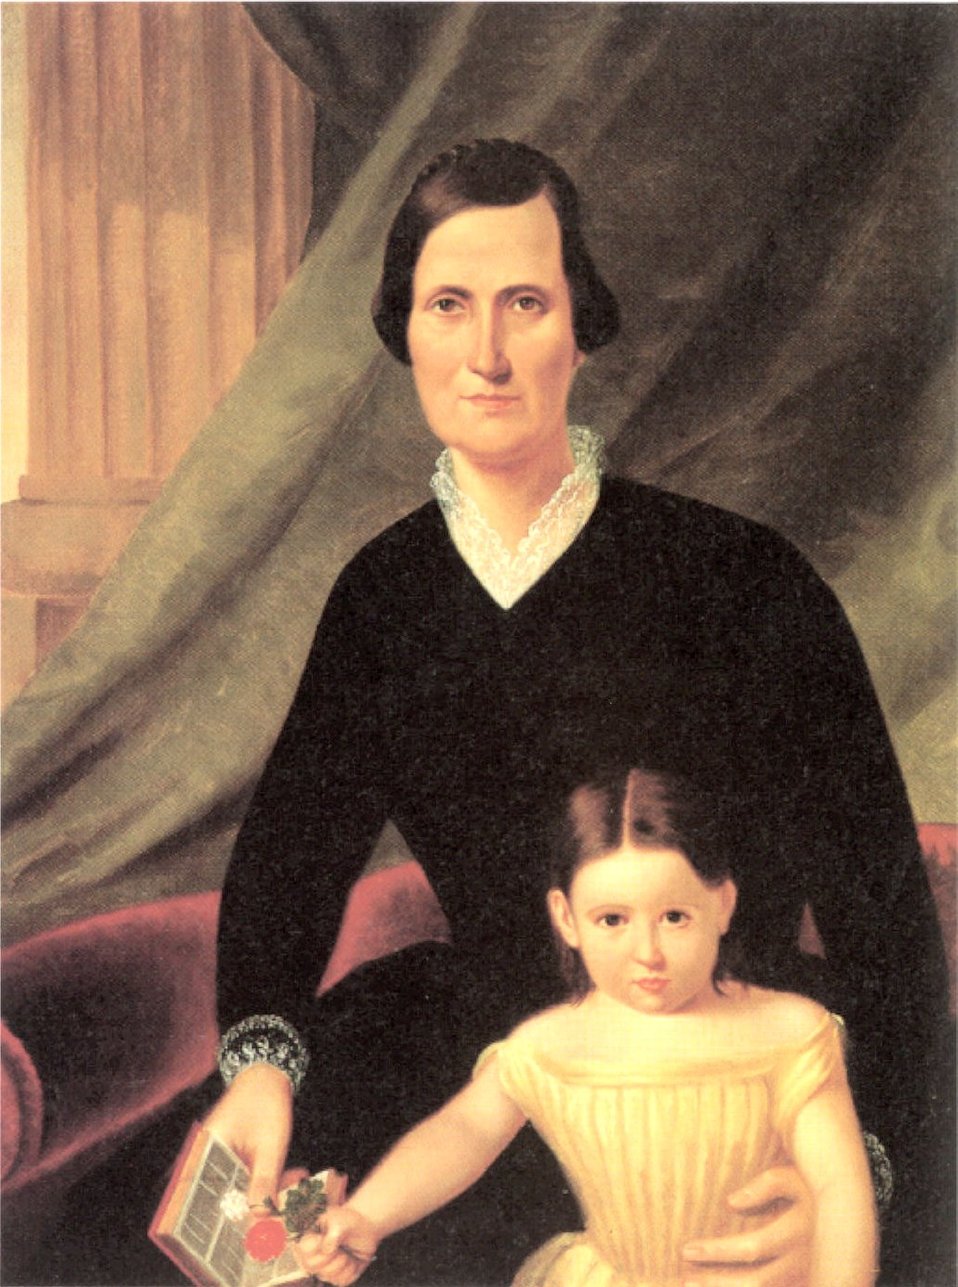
'Mrs Gerrit P. Judd and her Daughter Juliet Isabel', oil on canvas painting by James Gay Sawkins